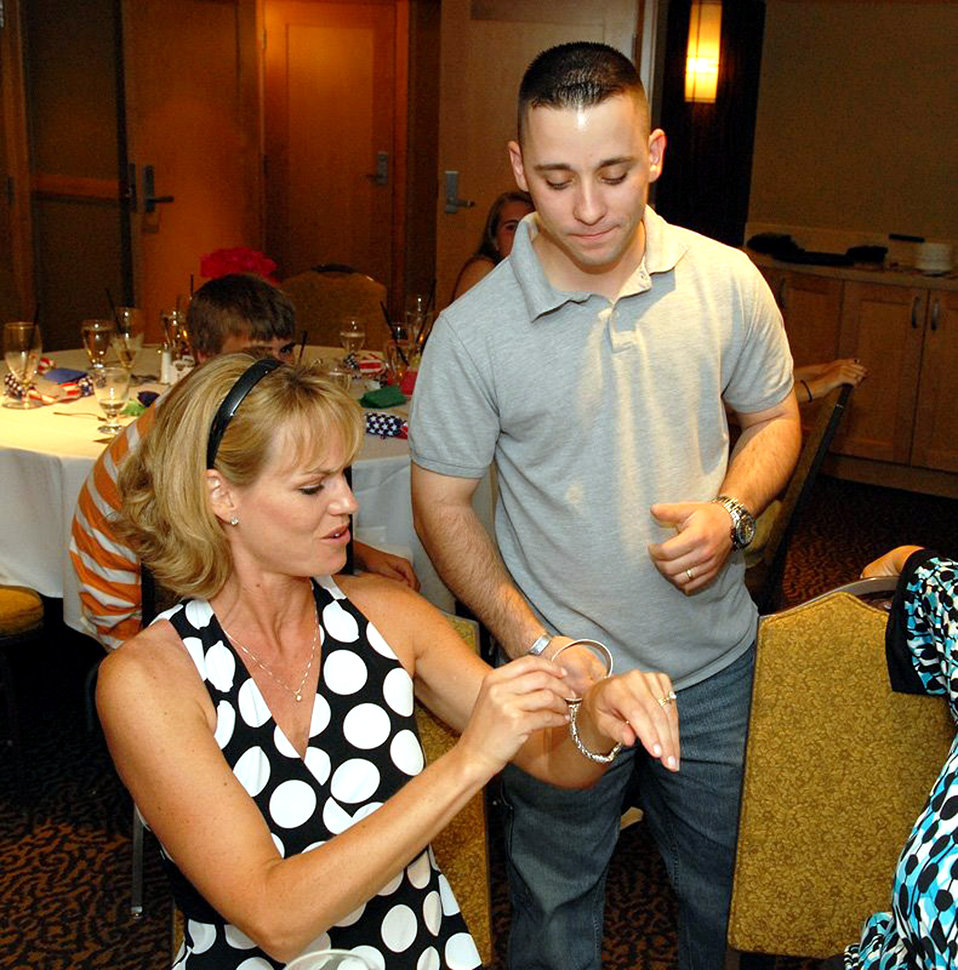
Remembering Lieutenant Jones: An Airman's search for a hero's family

Staff Sgt. Gary Ritter gives the POW/MIA bracelet he wore for 19 years to the daughter of the person whose name it bares. Kristine Galemmo, the youngest daughter of 1st Lt. George Jones of Aberdeen, Miss., accepted the bracelet during a special dinner honoring her father's memory held May 28 in Washington. Sergeant Ritter is a combat arms instructor at the Expeditionary Center at Fort Dix, N.J.